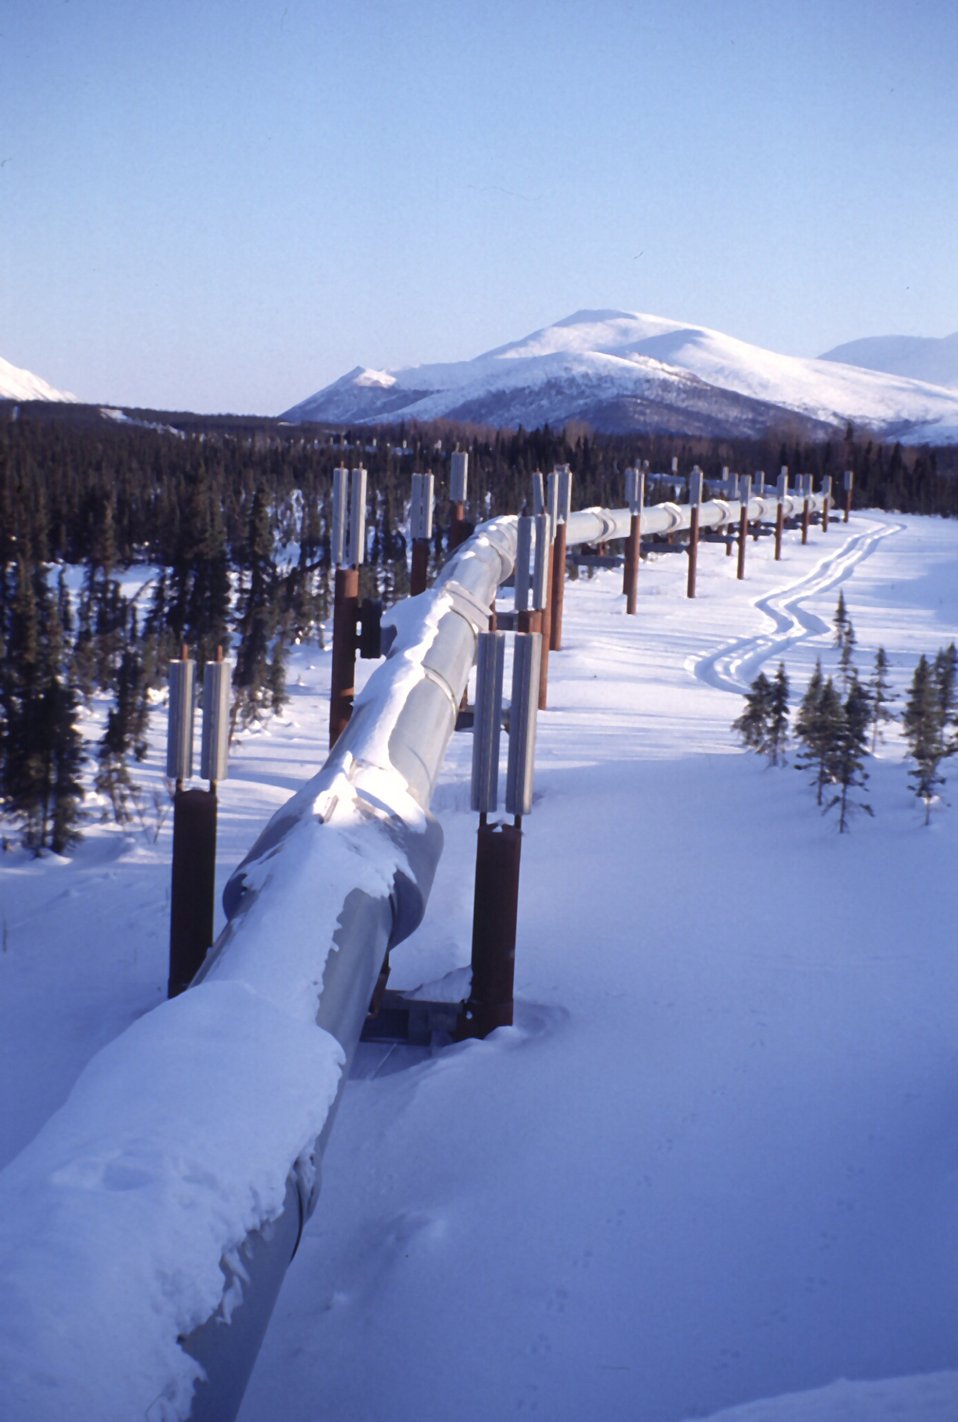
Trans-Alaska Pipeline, Dalton Highway